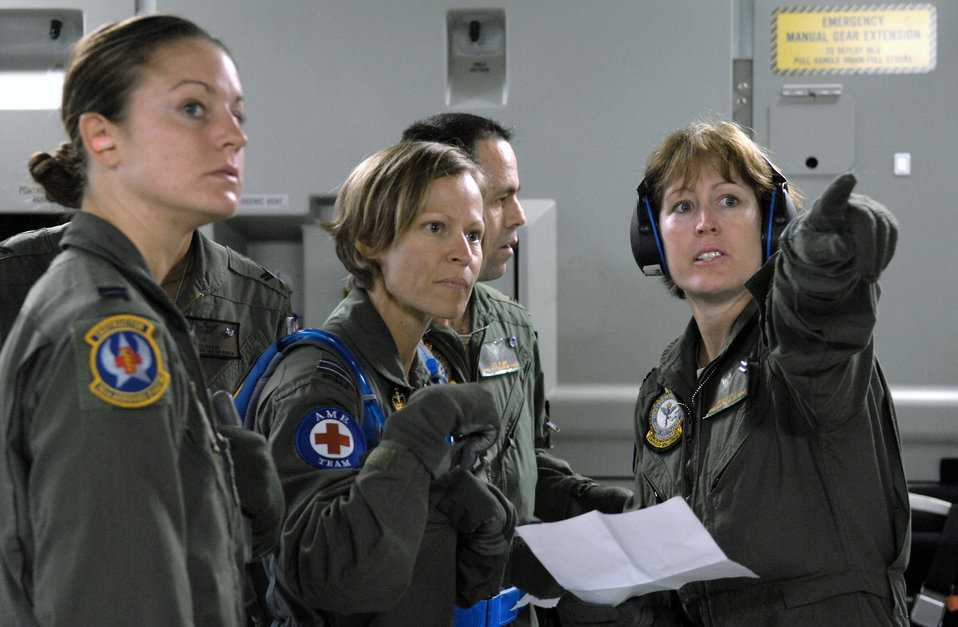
Australians train to save lives on C-17

Capt. Jennifer Haubert (left) observes Royal Australian Air Force medical personnel going over a set-up checklist on a C-17 Globemaster III Oct. 16 during aeromedical evacuation operations training at Hickam Air Force Base, Hawaii. Airmen from the 18th Aeromedical Squadron at Kadena Air Base, Japan, are at Hickam to train RAAF medical personnel who will be using specialized equipment and the C-17 for aeromedical evacuation. Captain Haubert is with the 18th AMS.